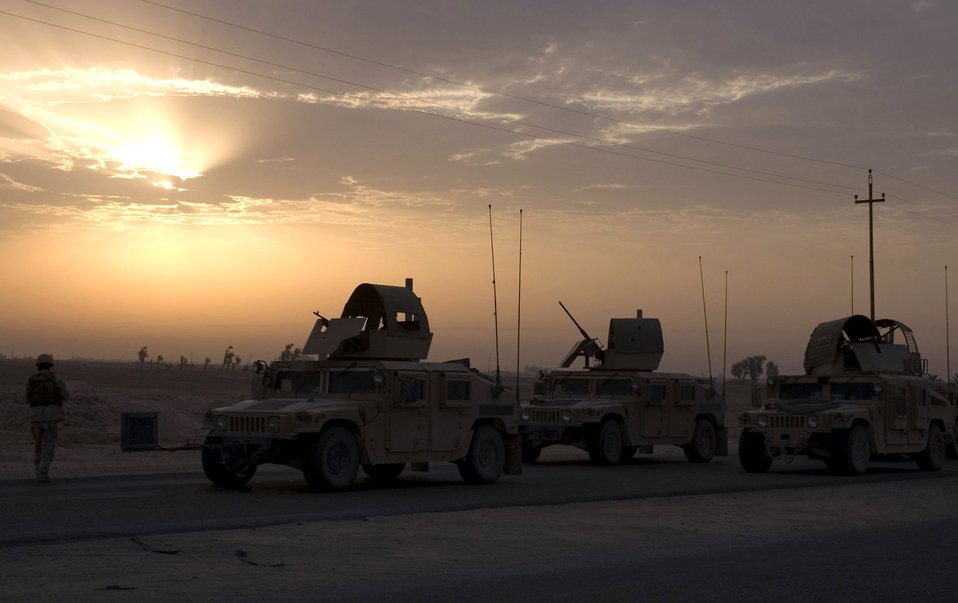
Airmen help keep Iraqi supply routes open

Humvees from the 887th Expeditionary Security Forces Squadron slowly follow behind members of the 887th ESFS during a patrol in August in southern Iraq. Members of the 887th ESFS patrol convoy routes to keep them clear of improvised explosive devices.